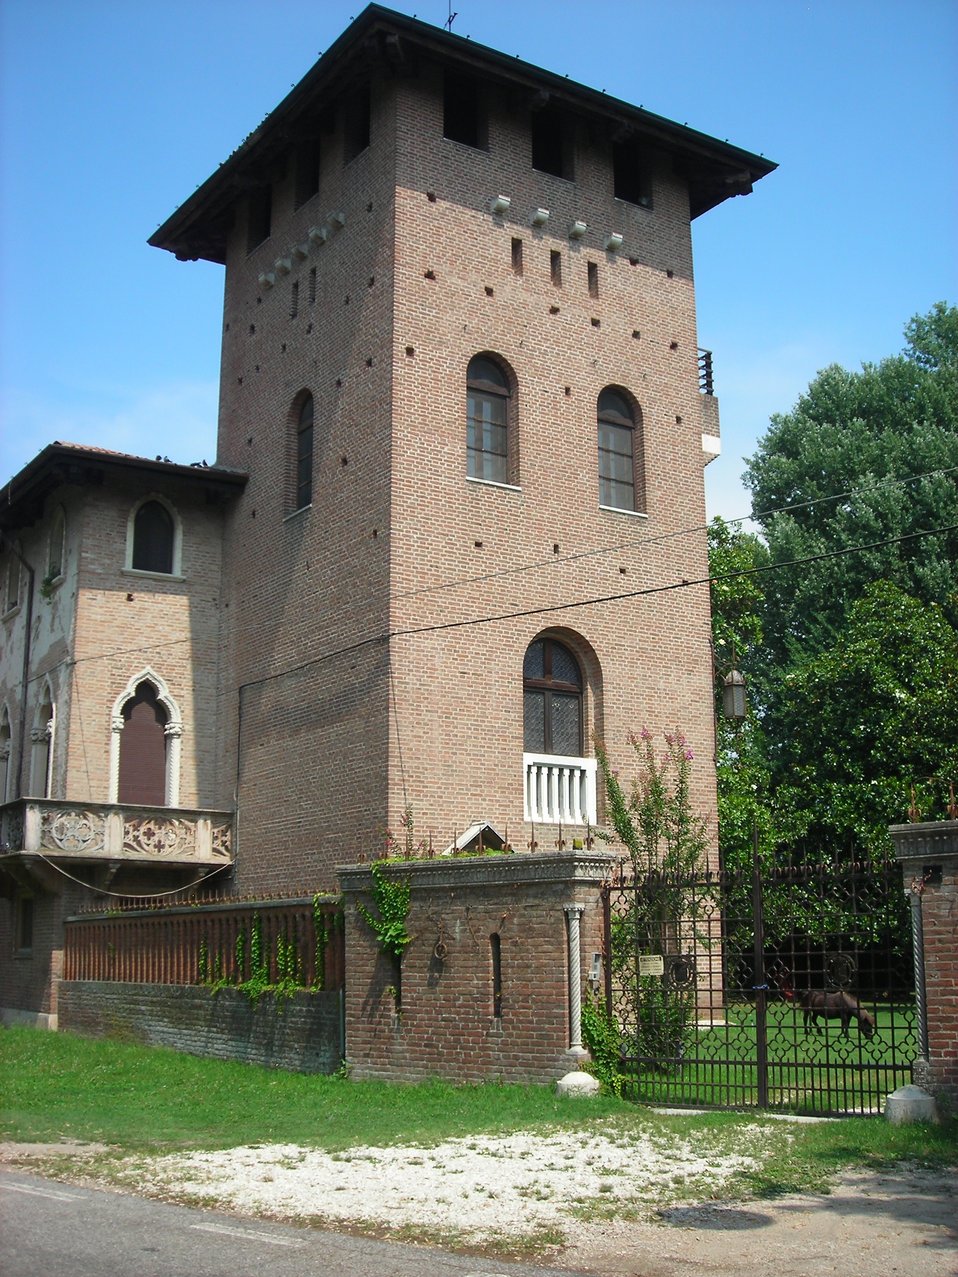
Italiano: La Palazzina, presso l'argine dell'Adige a Villa Bartolomea